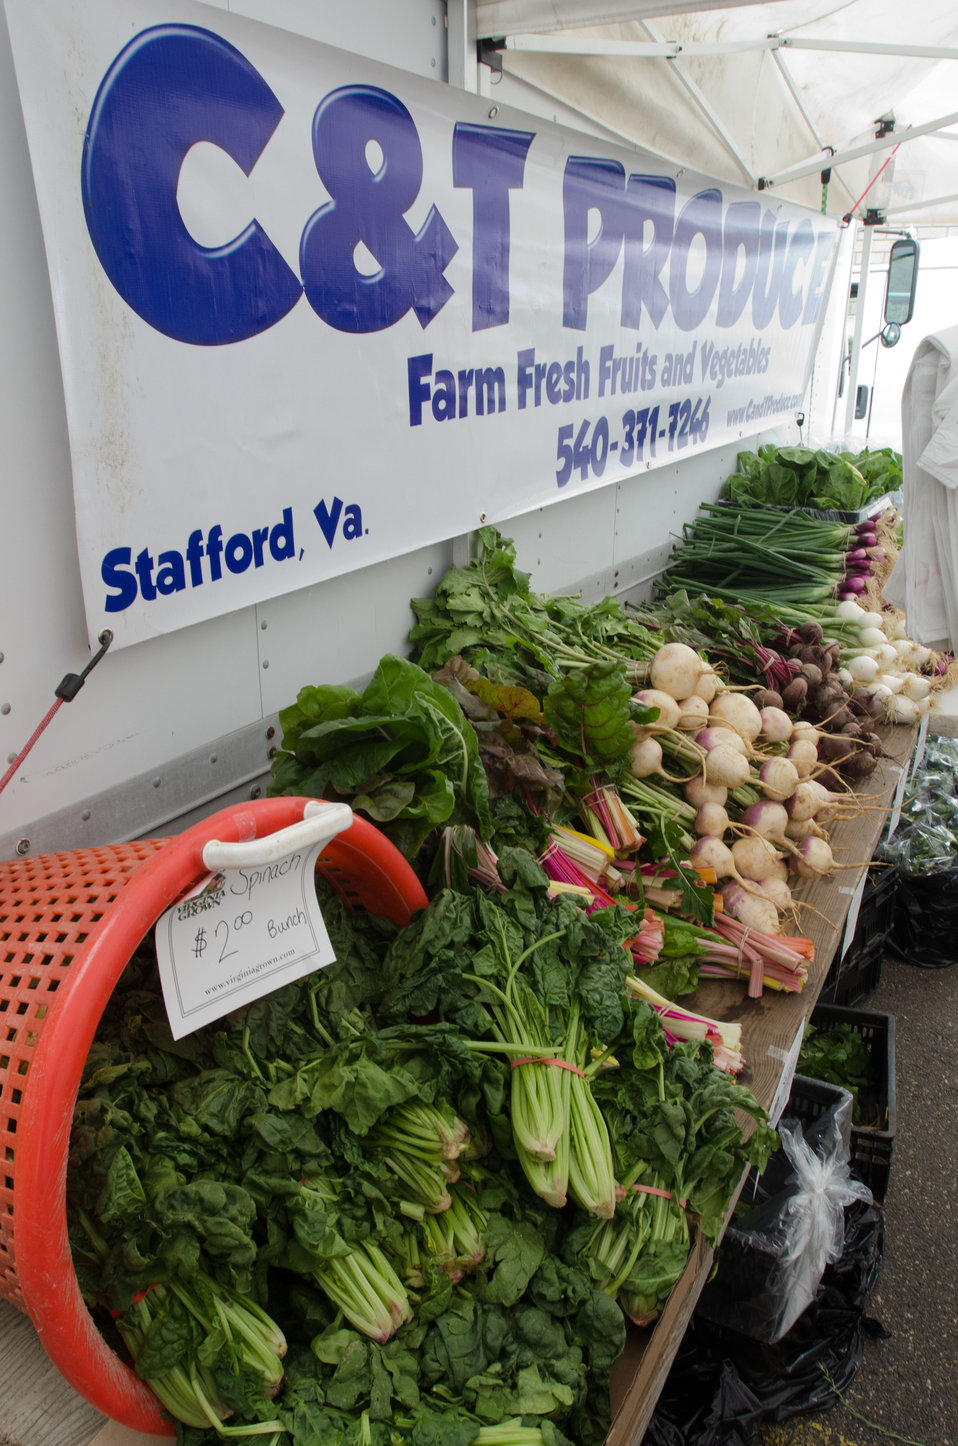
Fresh vegetables from C & T Produce at the U.S. Department of Agriculture (USDA) summer farmers market opening of the 17th season at the USDA Whitten Building east parking lot in Washington, D.C., on Friday, May 31, 2012. This year's theme is Grow, Healthy, Eat Healthy & Be Healthy. USDA and Fuel Up to Play 60, in partnership with the National Dairy Council and the National Football League, invited residence, visitors and local school children to participate in opening day activities. Hip Hop Public Health featuring Easy A.D. from Cold Crush Brothers and disk jockey Artie Green play music and invite people to get up on stage to dance or hula hoop to get active. D.C. Truck Farm help people know from what plants, that certain herbs, fruit and produce come from by giving tail-gate tours of the garden growing in the bed of their pickup truck. The Peoples Garden Initiative and USDA Executive Master Gardeners gave away a variety of fruit and produce seedlings to include the Tomato ‘Abraham Lincoln’ in celebration of the USDA 150th Anniversary and to share their harvest. New features for 2012 include an on-site sign language interpreter, a hand washing station, and a USDA-certified organic vendor. Other products selling today are fresh fruits, vegetables, herbs, baked goods, meats, kettle popcorn, local honey, hand-made soap and more.